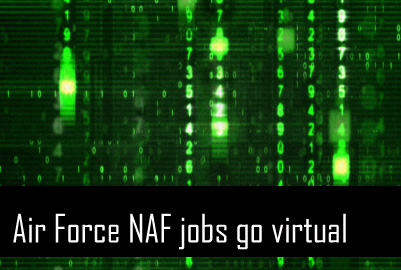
Applying for Air Force NAF jobs goes virtual

A new centralized online tool is making it easier for job seekers to find and apply for federal careers in various nonappropriated fund activities, including Air Force clubs, golf courses, child development centers, youth centers, bowling centers and outdoor recreation centers.